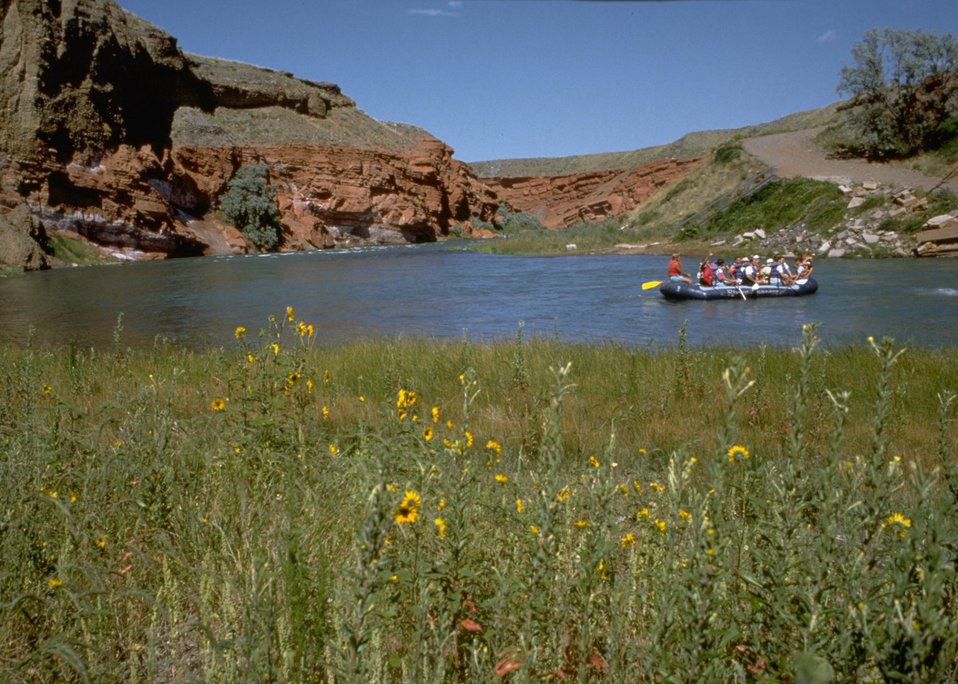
Shoshone River rafters.